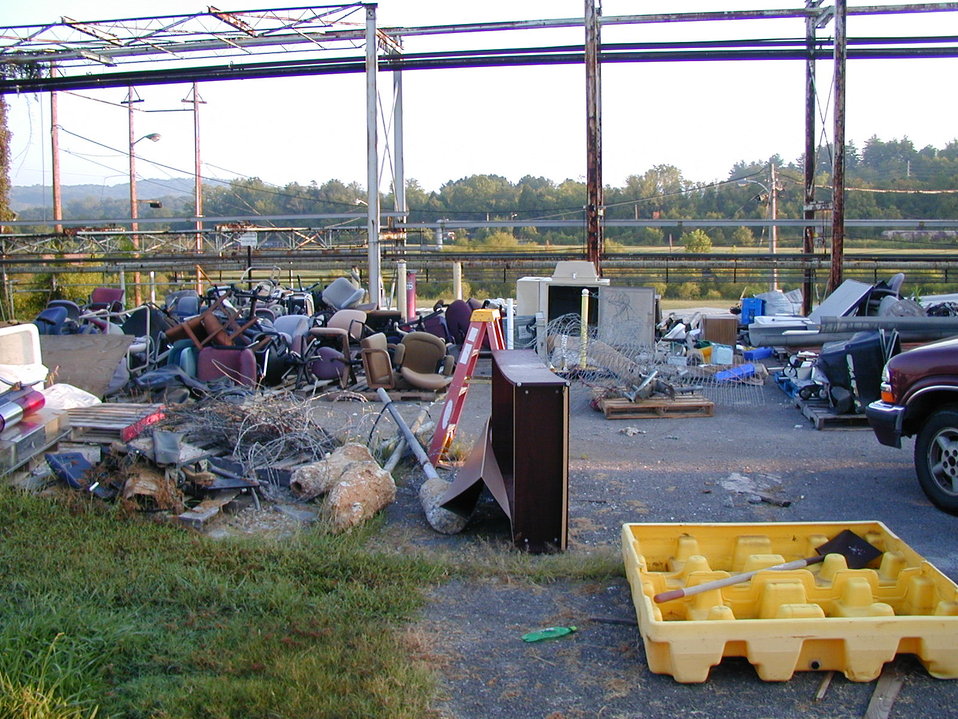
‘Project Wipeout’ Helps Clean Up Oak Ridge

A waste area at an East Tennessee Technology Park scrap yard before cleanup.

Project Wipeout is an effort to locate, identify, and remove legacy waste scattered throughout the site.

In August 2011, EM’s contractor in Oak Ridge, URS | CH2M Oak Ridge (UCOR), began using available workers and other resources for the mission to eliminate primarily non-radioactive construction debris at locations across the site. Some of these areas are small with a few pallets and recyclable metal. Others cover thousands of square feet in debris. All of them require active surveillance and maintenance to account for the material and ensure they are stable and secure.

Although personnel and resources are fully deployed most of the time, the initiative maximizes efficiency during occasional slower periods between peak work demands.